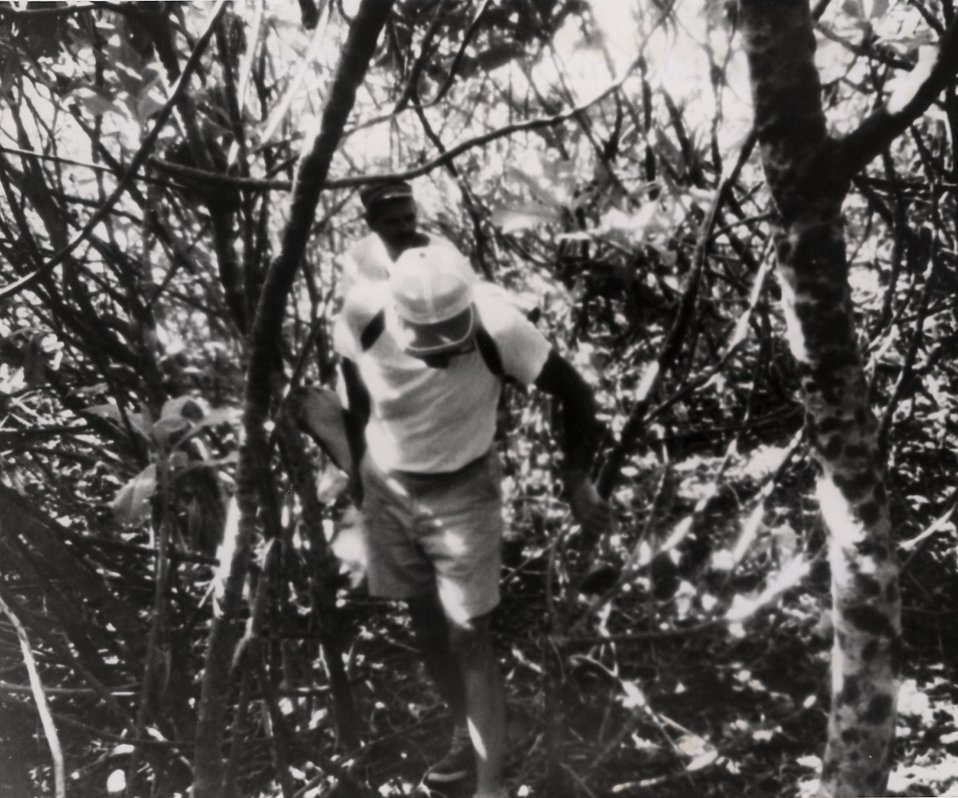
Scientist check the condition of Bikini and Eniwetok Atolls, six years after the last US atmospheric nuclear test there.